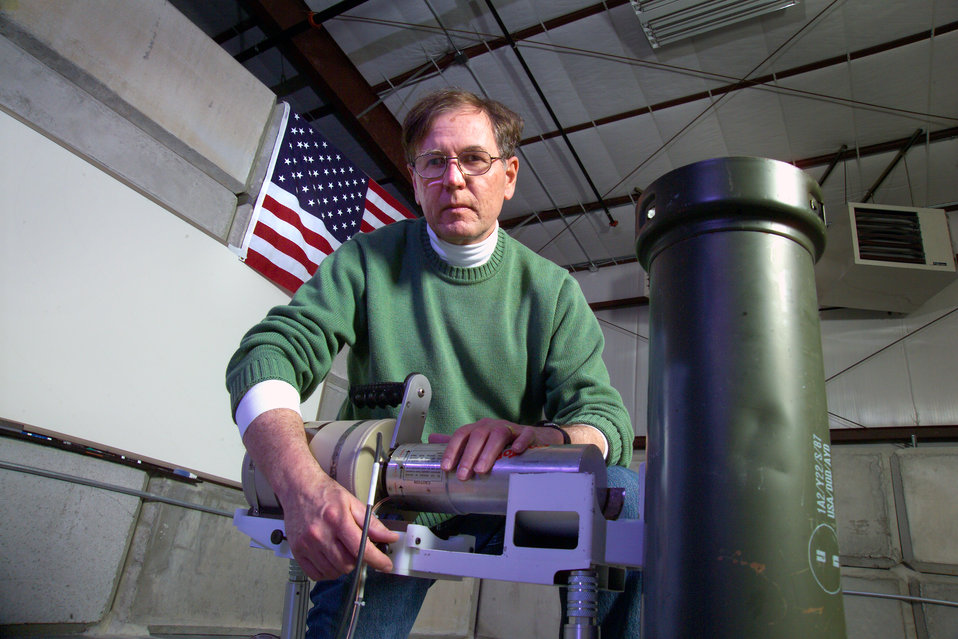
In 1992, Idaho National Laboratory won an R&D Award for its Portable Isotopic Spectroscopy system. It has been pressed into service in applications as diverse as treaty verification, determination of the content of canisters found in Baltimore Shipyards, and in the hunt for weapons of mass destruction.